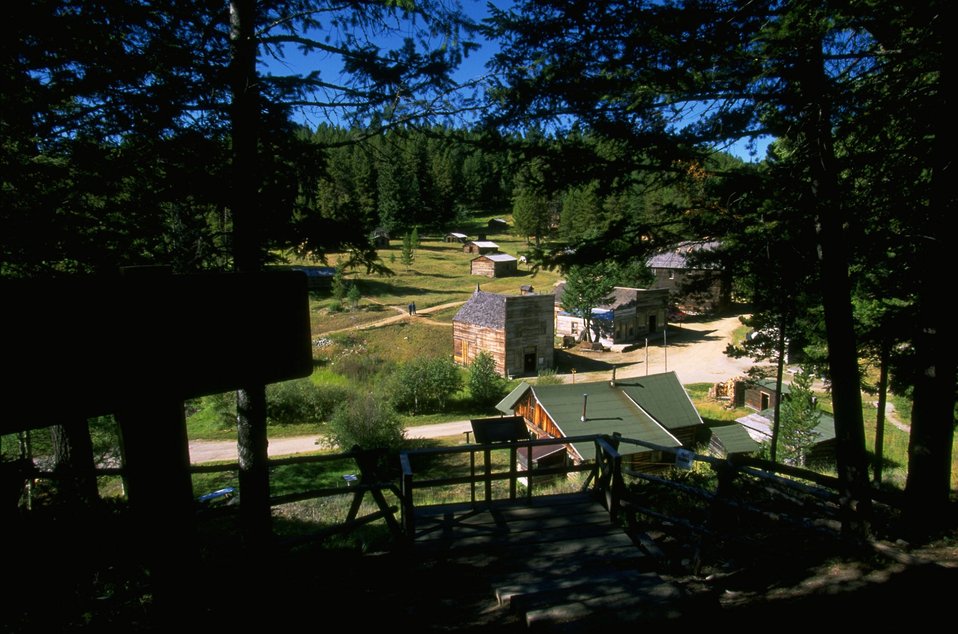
Garnet Ghost Town